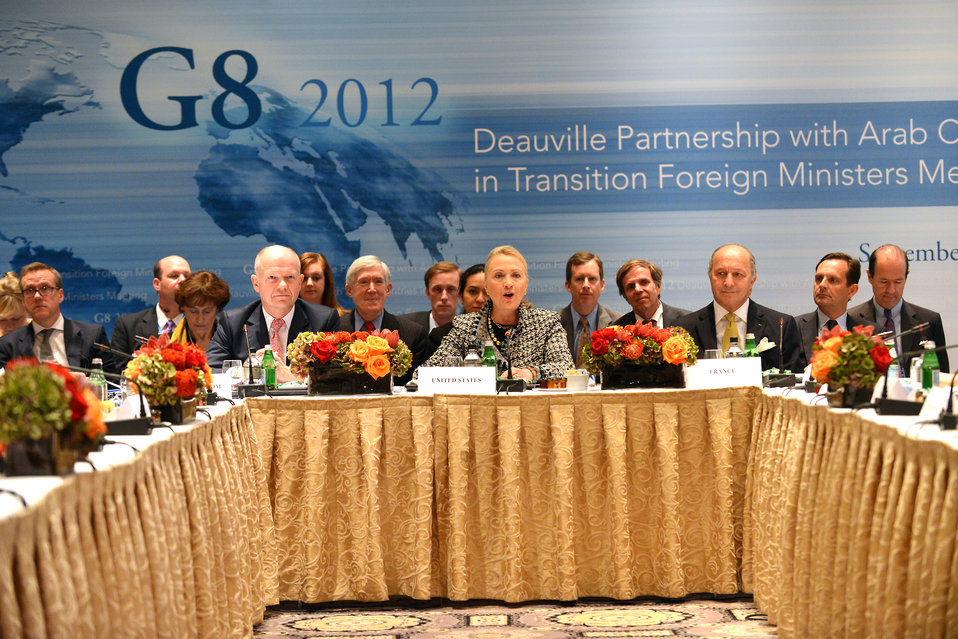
Secretary Clinton Hosts G8 Deauville Partnership with Arab Countries in Transition Foreign Ministers Meeting

U.S. Secretary of State Hillary Rodham Clinton hosts a G8 Deauville Partnership with Arab Countries in Transition Foreign Ministers Meeting, at the Waldorf Astoria in New York City, September 28, 2012.